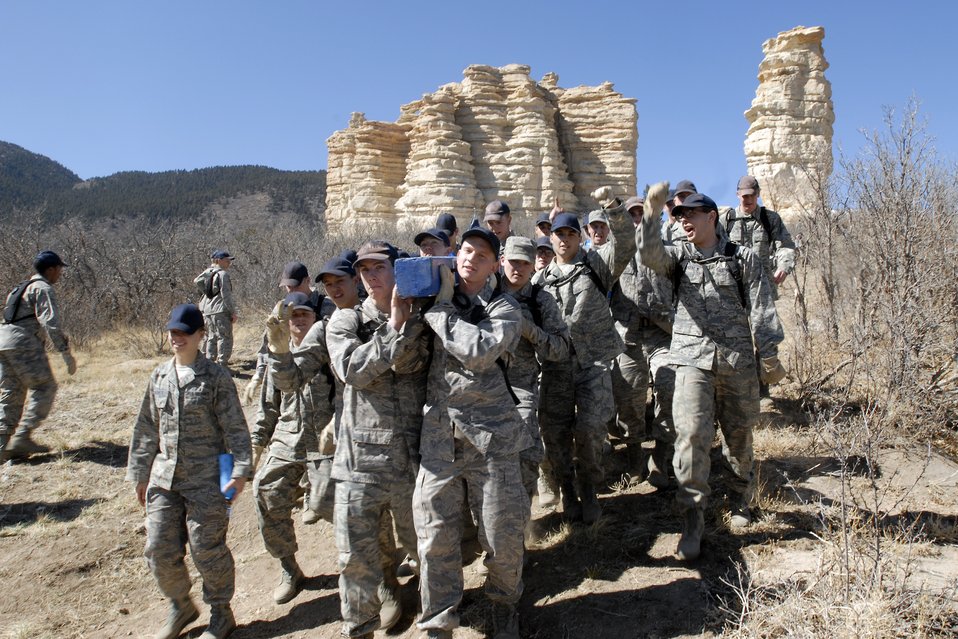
US Air Force Academy, CO

Fourth-class cadets arrive at Cathedral Rock during Recognitions